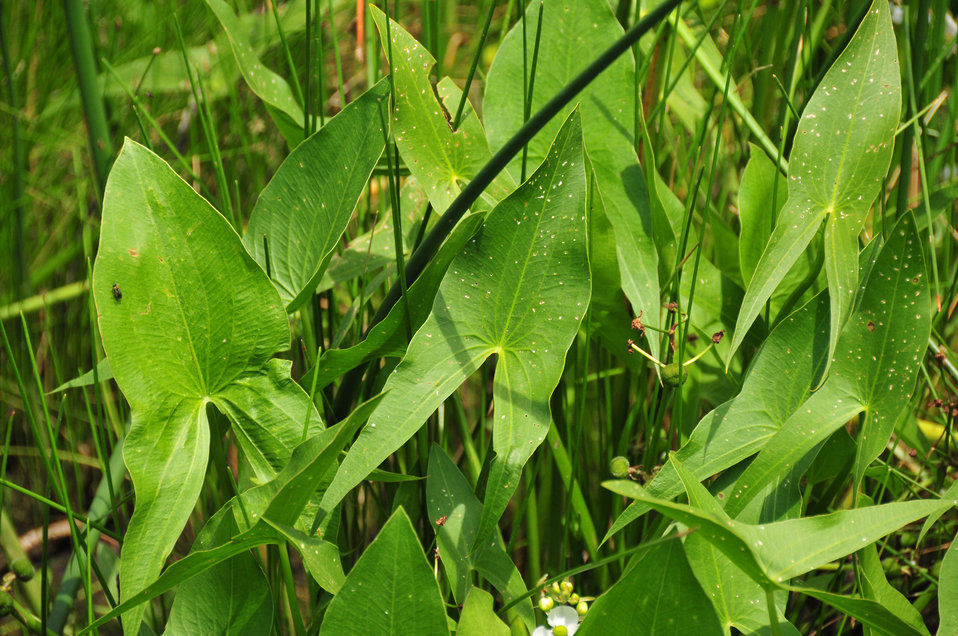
Arrowhead (Sagittaria latifolia) on Lacreek NWR 01

Arrowhead (Sagittaria latifolia) grows on Lacreek National Wildlife Refuge. Its roots store carbohydrates in small tubers and in the fall and winter large numbers of trumpeter swans return and feed heavily on these submerged tubers.